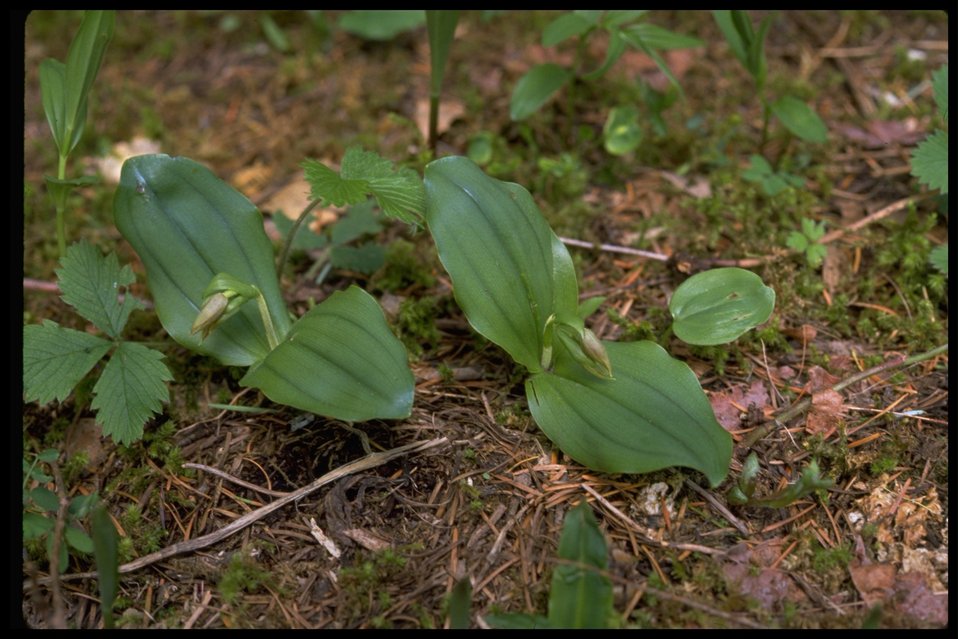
Farshot of clustered lady's slipper (Crypripedium fasciculatum).